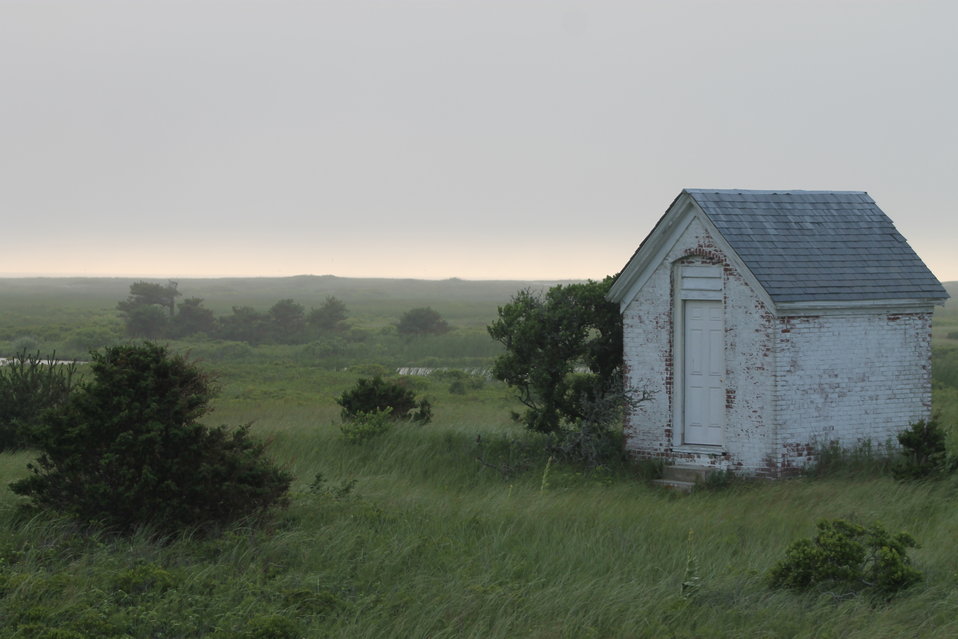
Foggy afternoon at the lighthouse

Monomoy National Wildlife Refuge, MA.